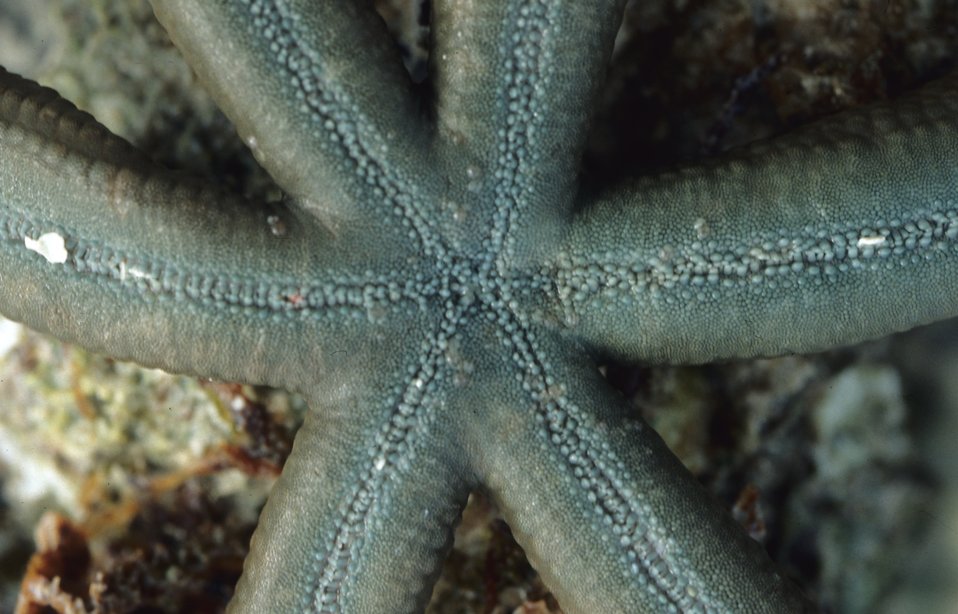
One Tree Reef. Sea star - closeup of mouth.